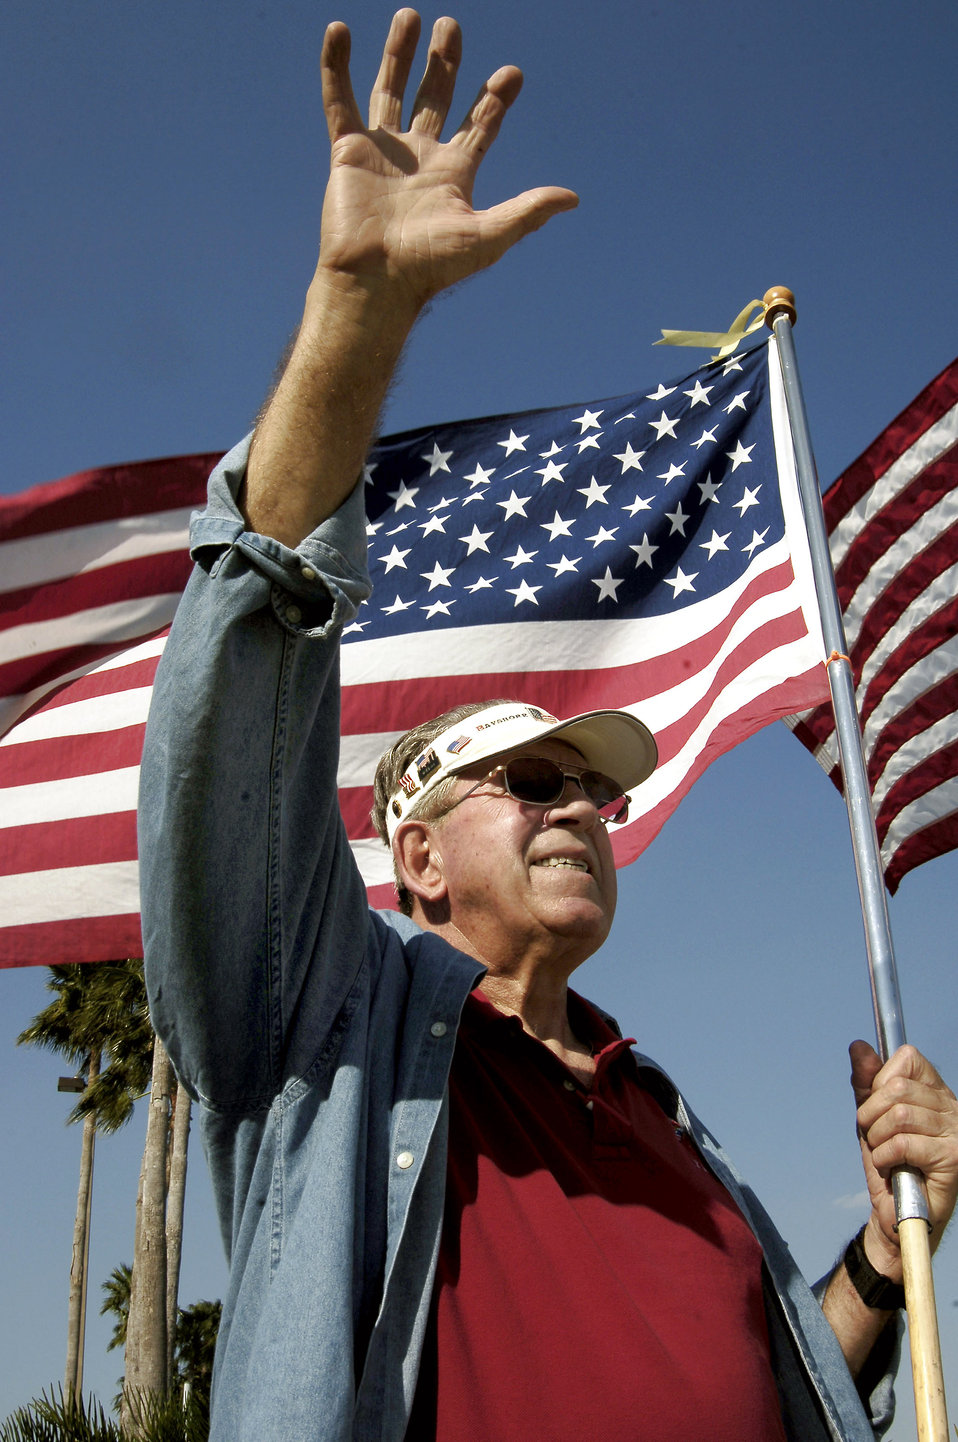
Patriots show their support

Paul Diehl shows his patriotism to members March 21 at MacDill Air Force Base, Fla. Mr. Diehl is a member of the Bayshore Patriots in Tampa. The patriots show their support to military members and their families by waving the American flag on one of the busy roads in Tampa. They consist of retired military and civilian members of the community.